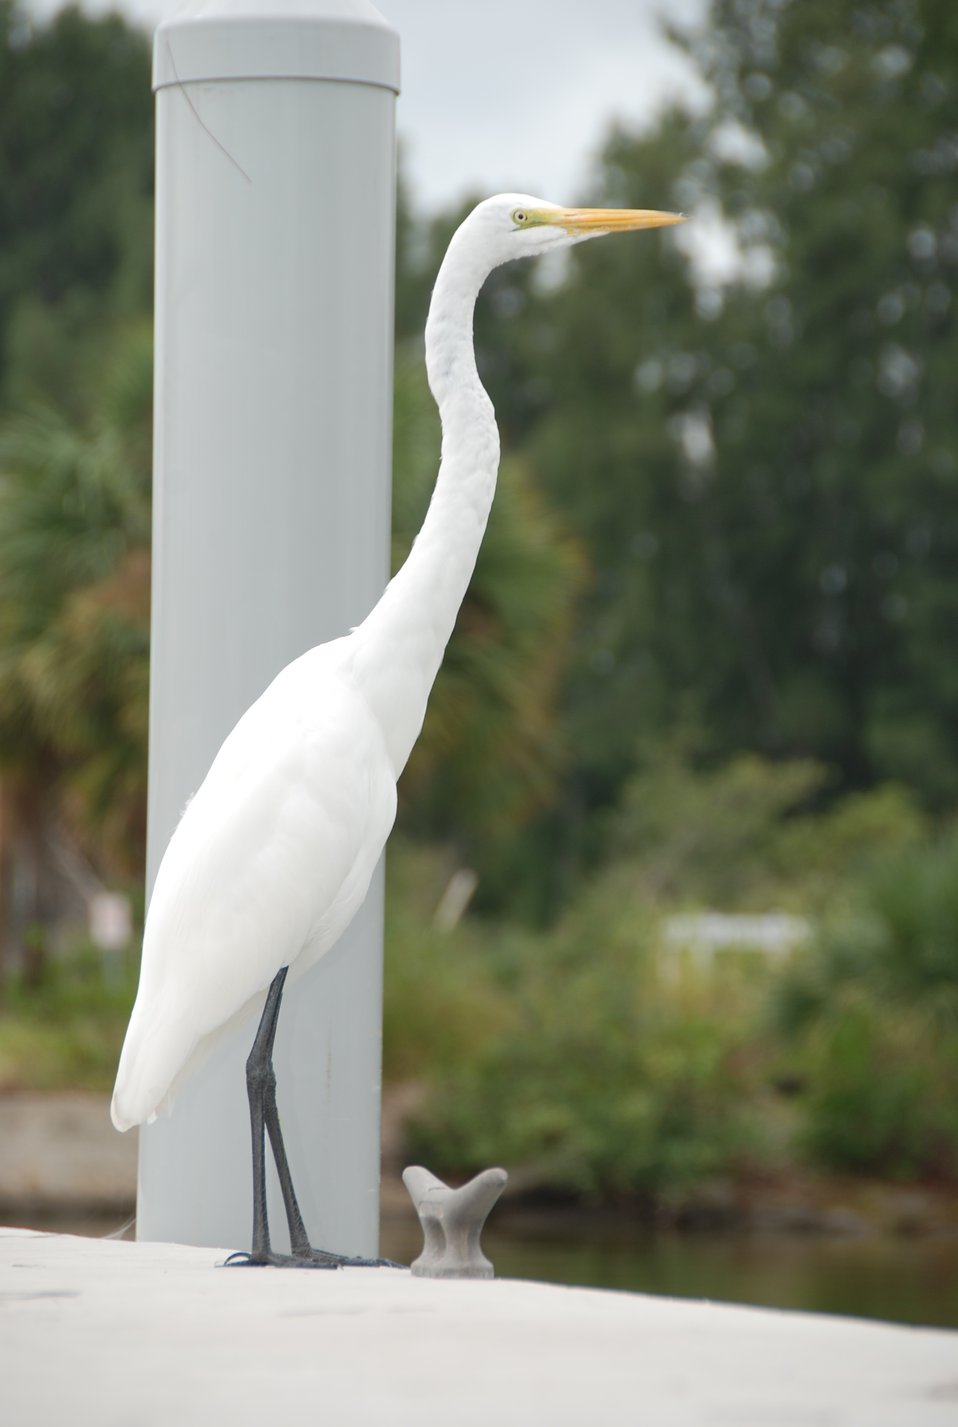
Merritt Island 3

An Egret at Merritt Island. Supported by the North American Wetlands Conservation Act.